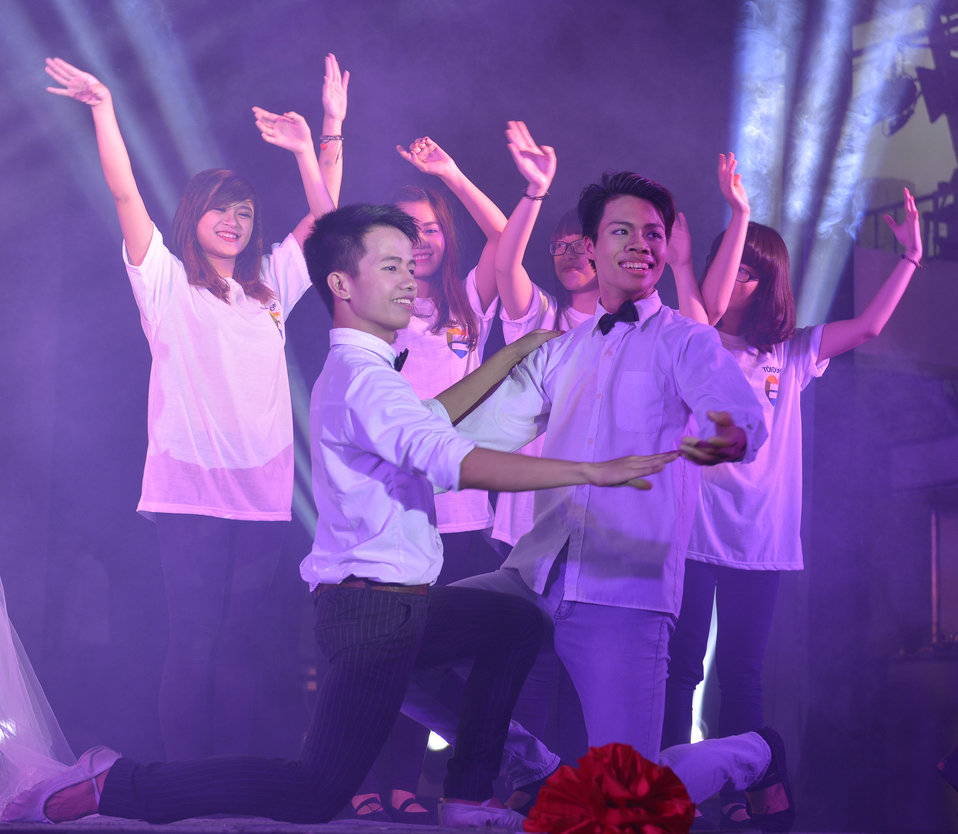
Performance at iSee LGBT Event

USAID Vietnam